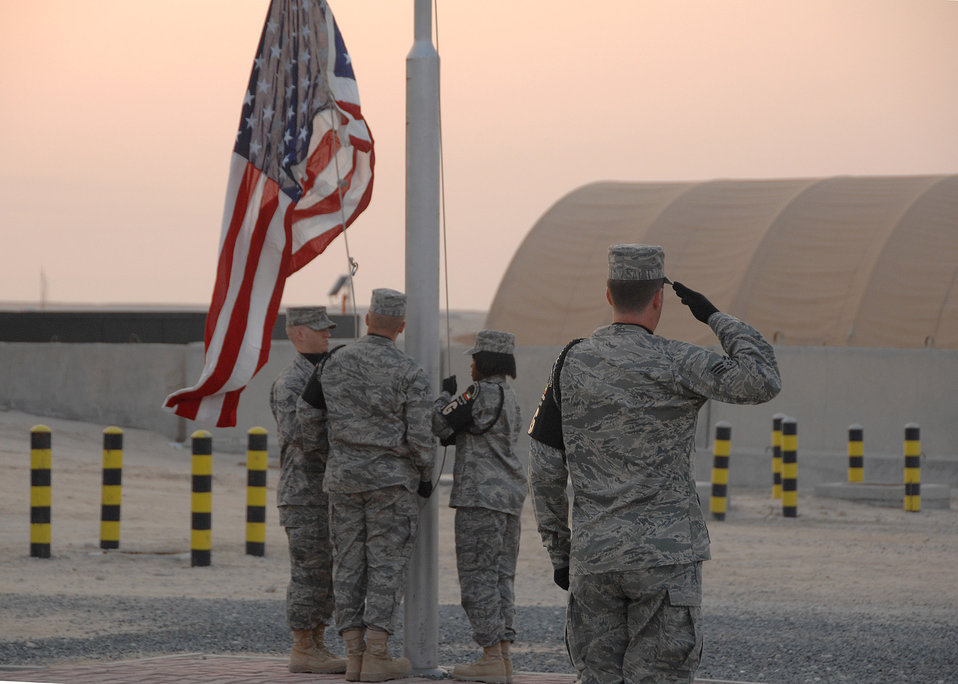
Remembering those who served

Members of the 386th Air Expeditionary Wing Honor Guard raise the American flag during the Veterans Day Reveille Ceremony Nov. 11 at an air base in Southwest Asia.